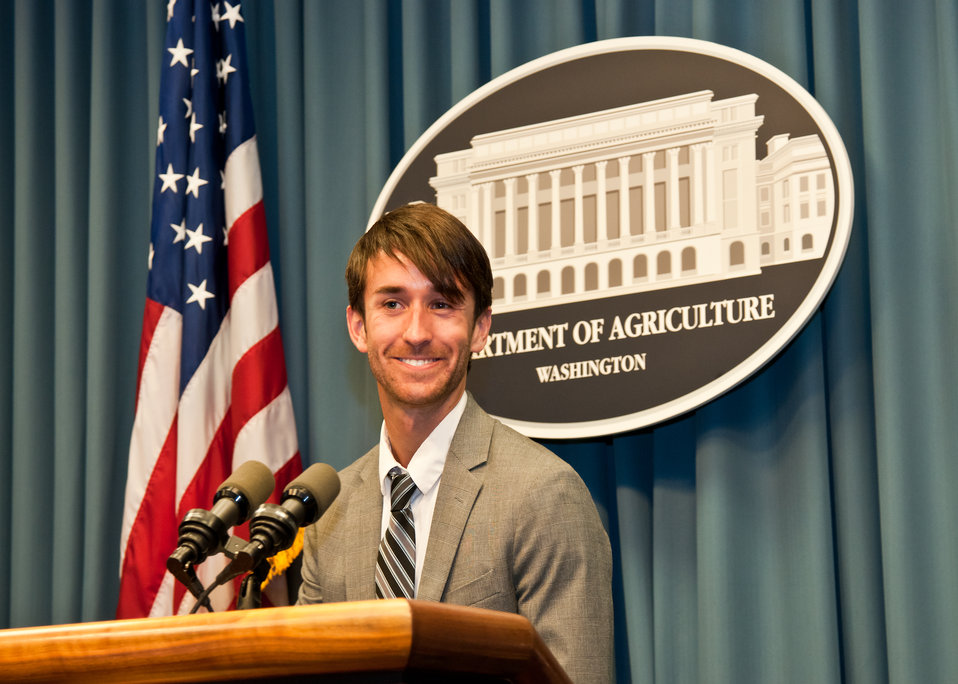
20110606-DM-RBN-HACU Interns

Hispanic Serving Institutions Strategic Planner Eric Swartz welcomes United States Department of Agriculture (USDA) Hispanic Association of Colleges and University (HACU) and Tribal College summer interns during their orientation at USDA in Washington, DC, Monday, Jun. 6, 2011. The HACU/Tribal College National Internship Program represents more than 400 colleges and universities committed to higher education in the U.S., Puerto Rico, Latin America, Spain and Portugal and places student interns each year with federal agencies in Washington, DC or in field offices around the country.